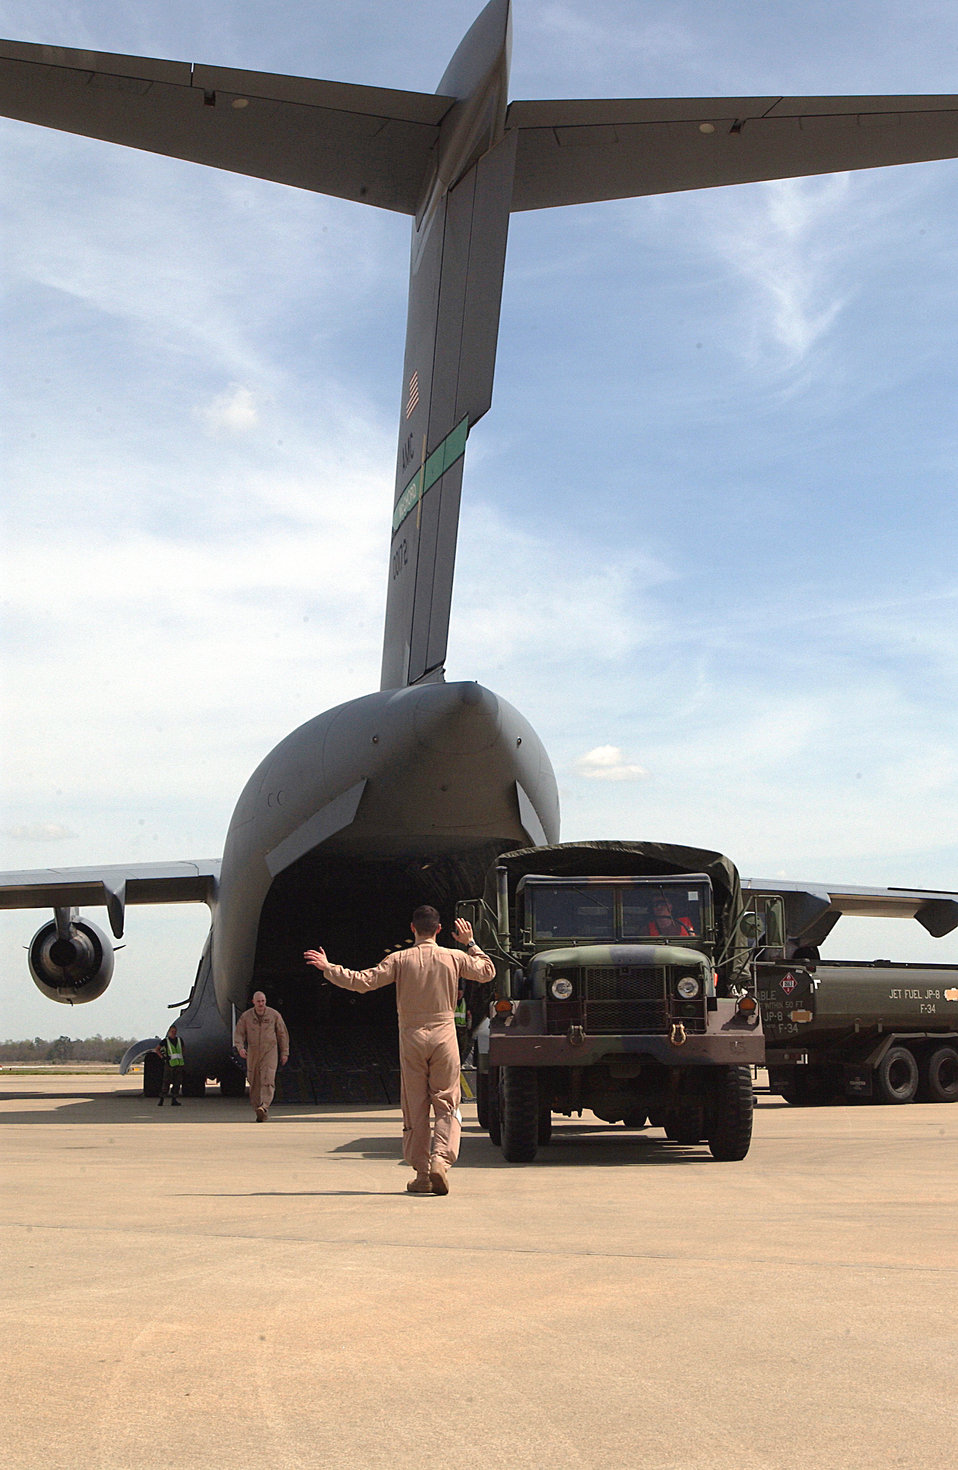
Move it!

SHAW AIR FORCE BASE, S.C. -- Airmen move cargo onto a C-17 Globemaster III here during an exercise March 27. The C-17 is assigned to McChord Air Force Base, Wash.